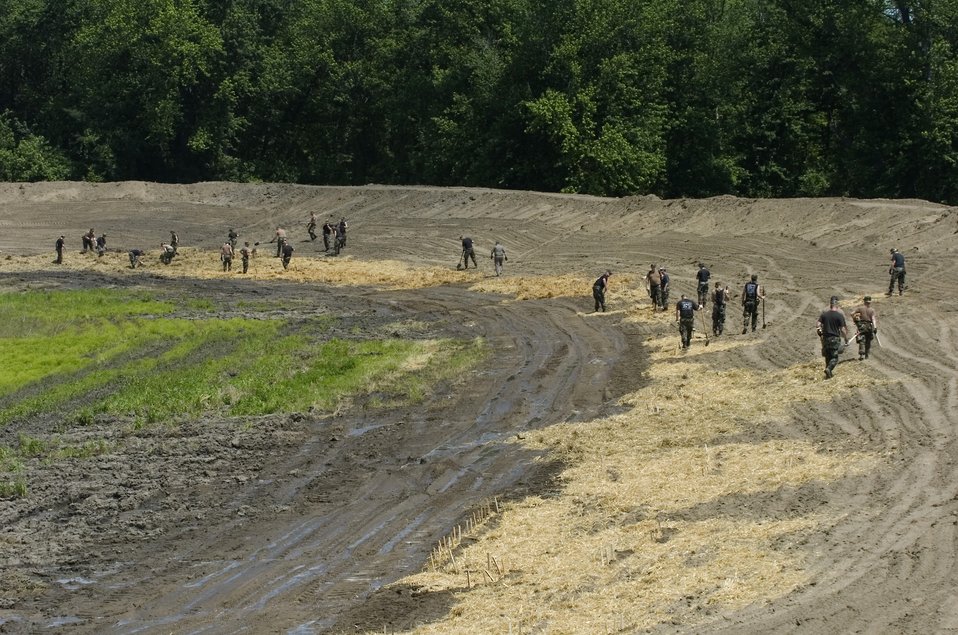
Air Guard prevents erosion

Iowa National Guard members from the 185th Air Refueling Wing repair an eroded area of a levee along the Mississippi River June 18 in Green Bay Bottom, Iowa. Airmen worked with local farmers and the Green Bay Bottom Levee and Draining District workers to maintain the levees. The 185th ARW is located in Sioux City, Iowa.